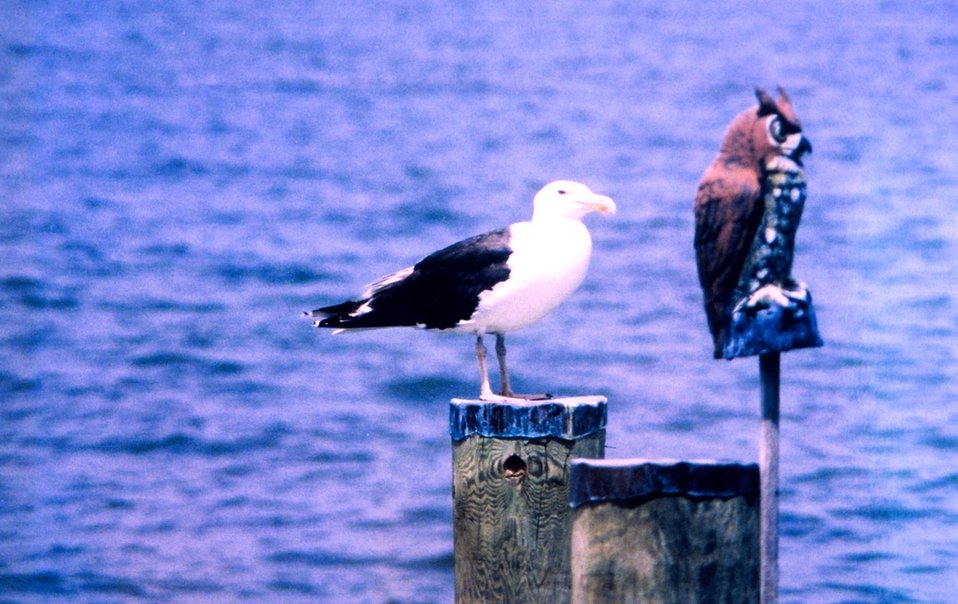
A Great Black Backed Gull on a piling. Obviously not scared of the owl.